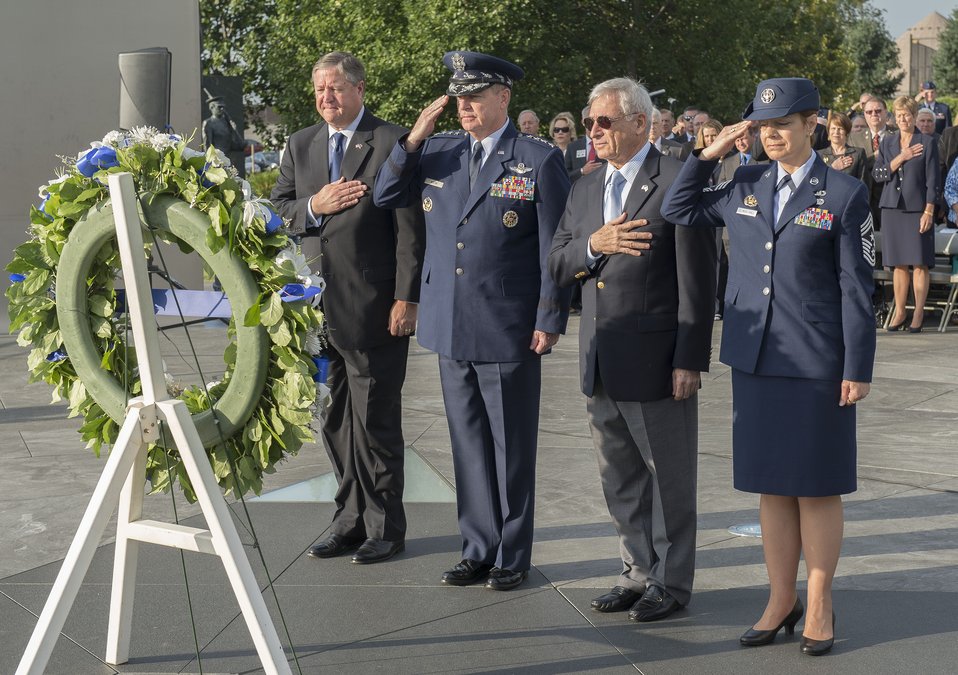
Air Force leaders attend AFA remembrance ceremony

From the left: Secretary of the Air Force Michael Donley, Air Force Chief of Staff Gen. Mark A. Welsh III, Air Force Association Chairman of the Board S.Sanford Schlitt and the Senior Enlisted Leader to the Chief, National Guard Bureau Chief Master Sgt. Denise Jelinski-Hall render honors during a wreath laying ceremony commemorating this year’s fallen AFA members at the Air Force Memorial in Arlington, Va., Sept. 16, 2012.